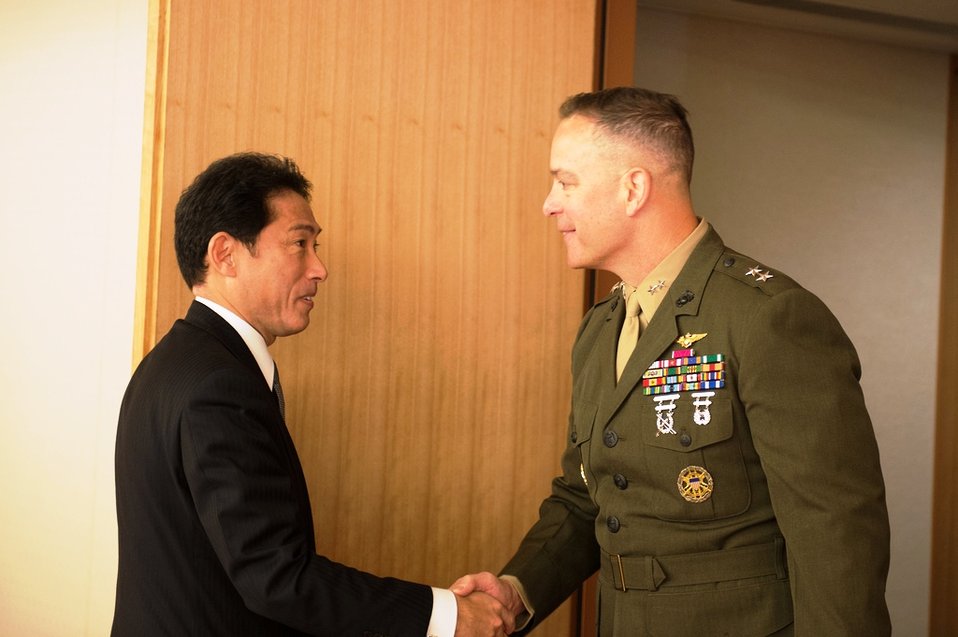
Major General O'Donnell Shakes Hands With Japanese Foreign Minister Kishida

Major General Andrew W. O'Donnell, Jr., Deputy Commander of the United States Forces, Japan, shakes hands with Japanese Foreign Minister Fumio Kishida before their meeting at the Ministry of Foreign Affairs in Tokyo, Japan, January 17, 2013.